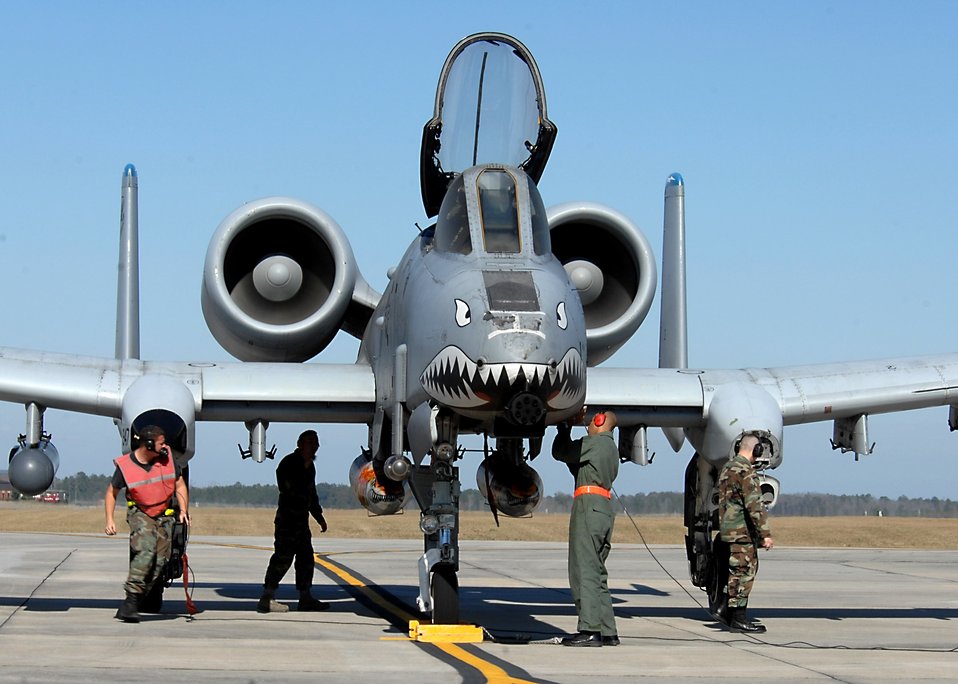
Getting set for a makeover

Maintainers from the 23rd Fighter Group work on the last A-10A Thunderbolt II at Pope Air Force Base, N.C. This aircraft soon will join the other Pope A-10s that are at Hill AFB, Utah, for precision engagement modification. An upgraded aircraft is then redesignated as an A-10C.